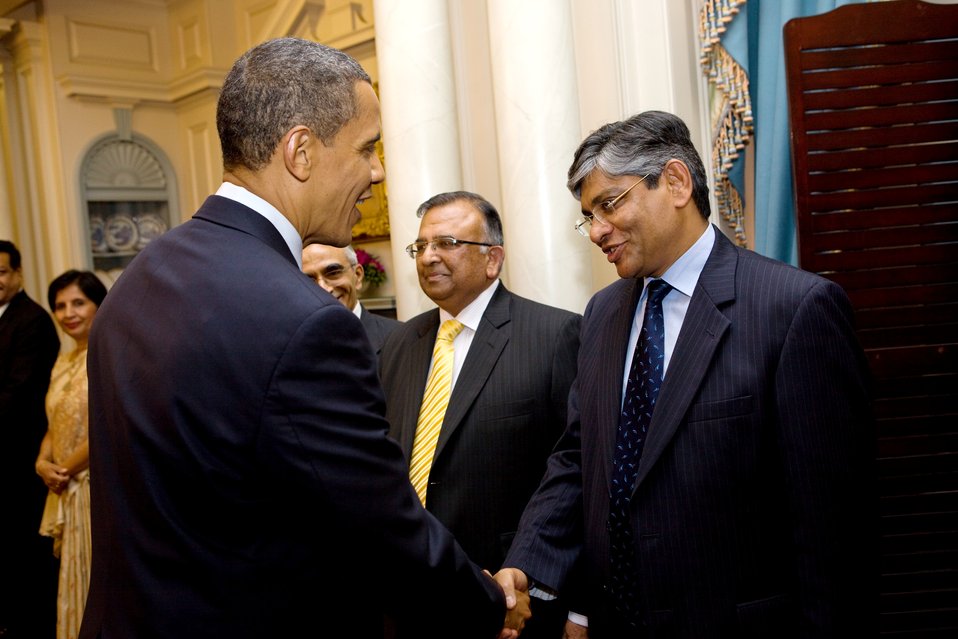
President Obama Shakes Hands With High-Ranking Indian Delegation Member

U.S. President Barack Obama shakes hands with a high-ranking member of the Indian Delegation at the U.S.-India Strategic Dialogue reception at the U.S. Department of State in Washington, D.C., on June 3, 2010.